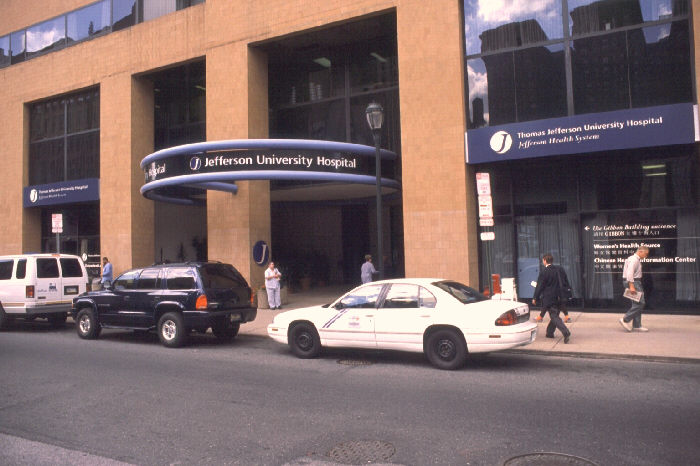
Thomas Jefferson University Hospital, 10th Street entrance.